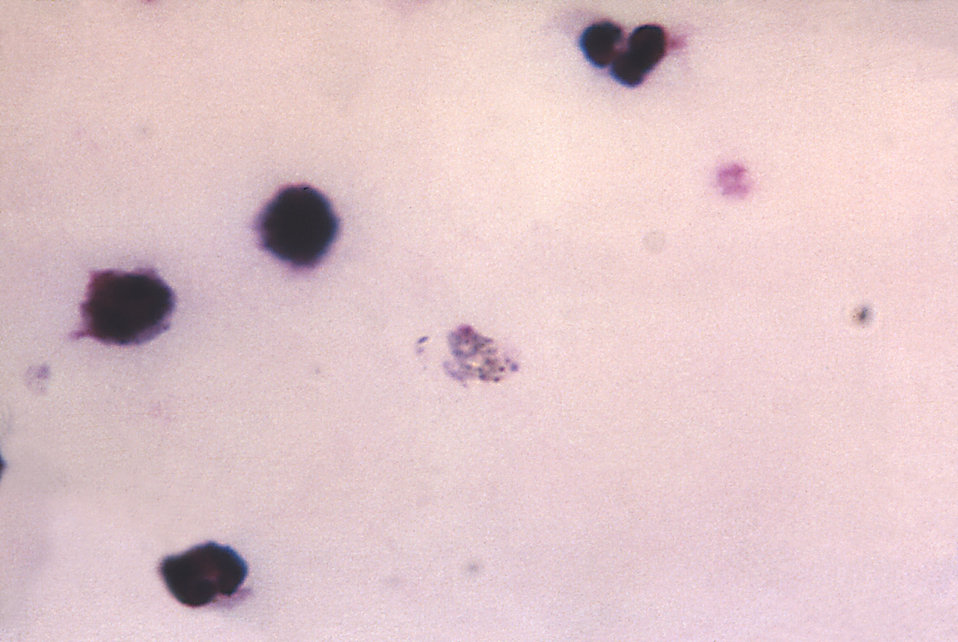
This blood smear micrograph depicts a Plasmodium vivax trophozoite.